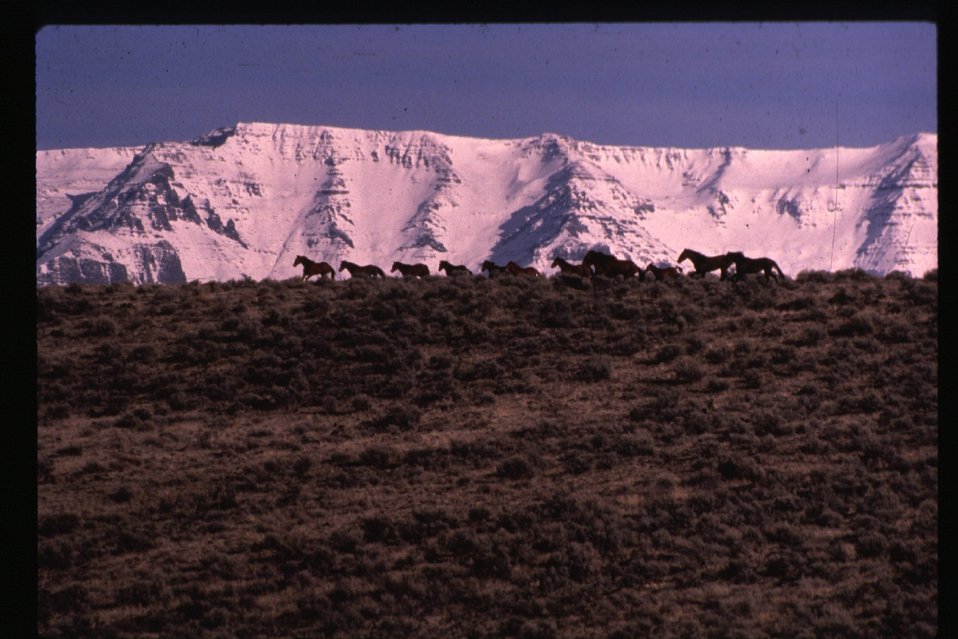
Wild Horse and Burro Adoption Program Steens Mountain Vale District Oregon